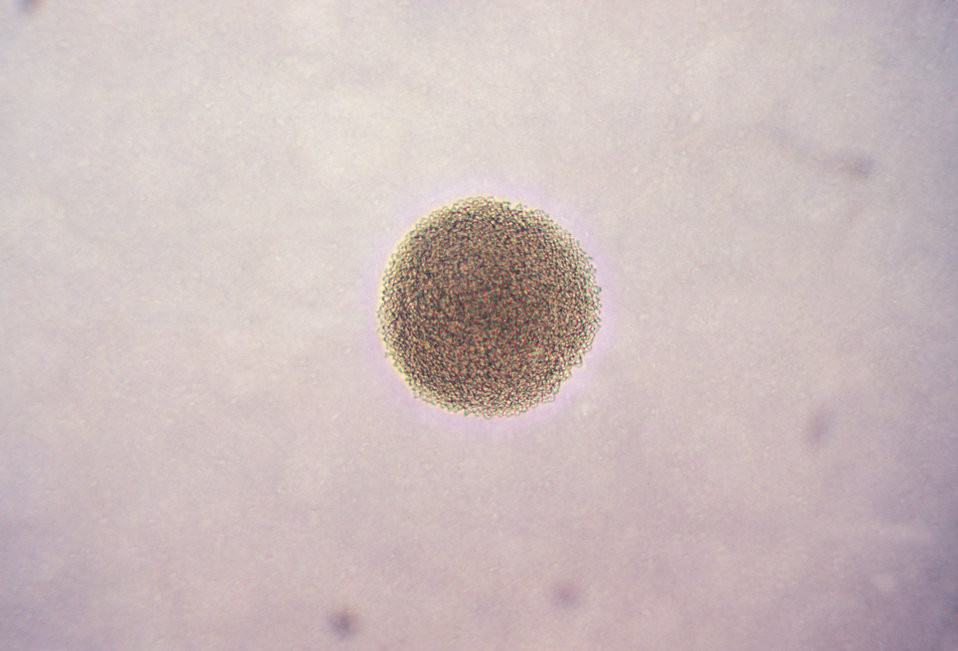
This is a photomicrograph of a T1 colony of Neisseria gonorrhoeae bacteria; Magnified 100X.